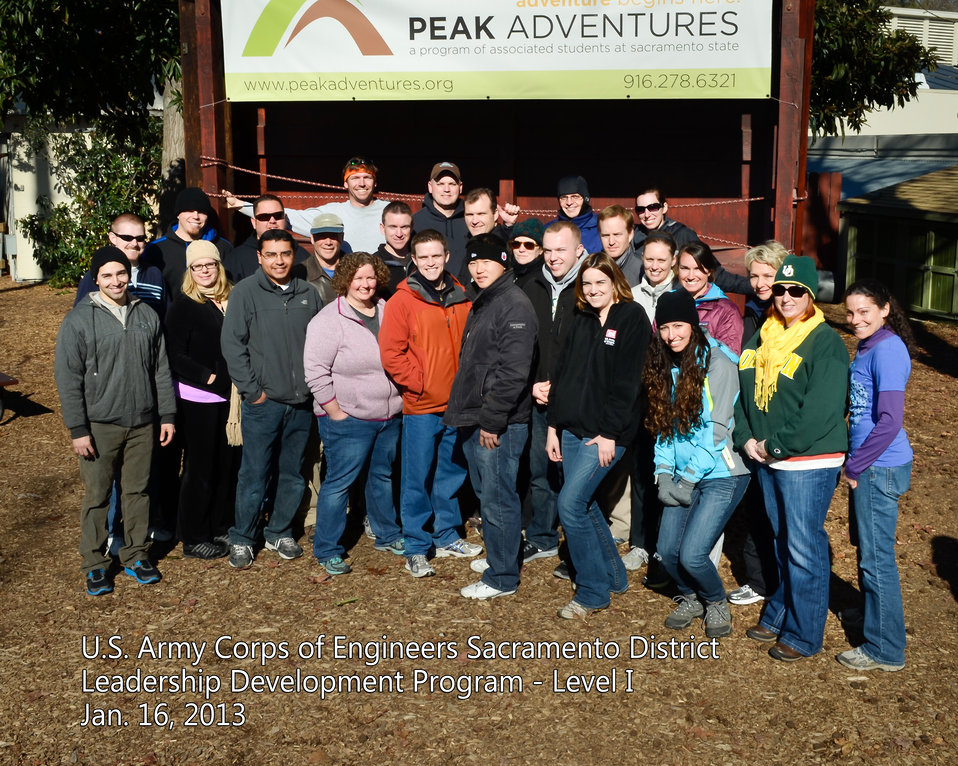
LDP-I team photo

U.S. Army Corps of Engineers Sacramento District employees break from ropes course activities at California State University-Sacramento, Jan. 16, 2013, to take a team photo during part of the district’s leadership development program.
The program is designed to introduce participants to the Army’s expertise in developing skilled, tested and character-based leaders at all levels and across all functional levels.